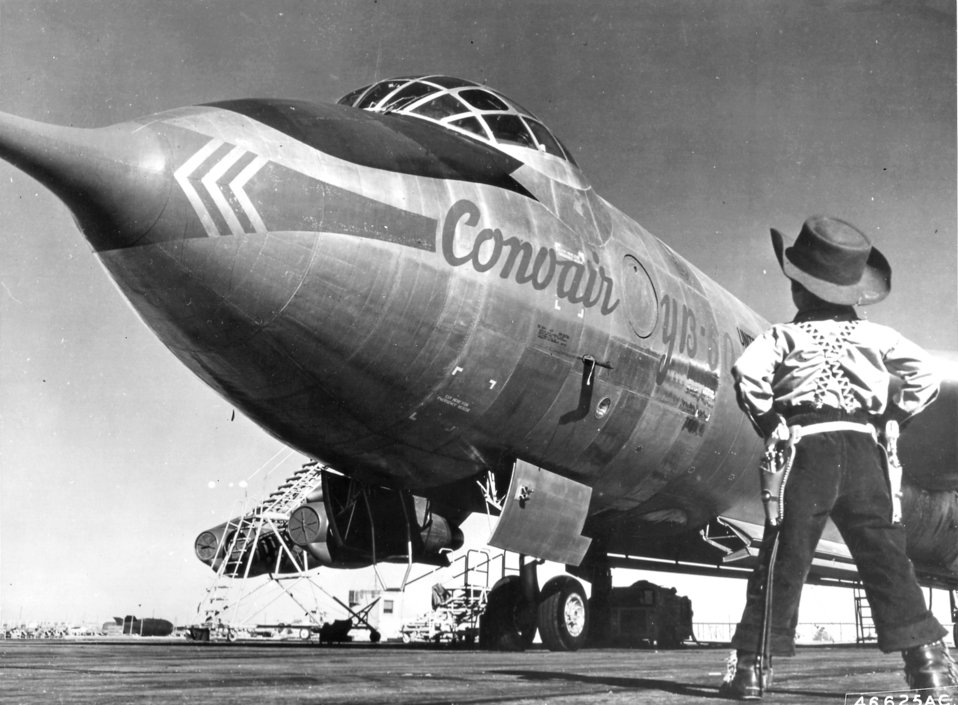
Boy looks at YB-60

1950's -- A young